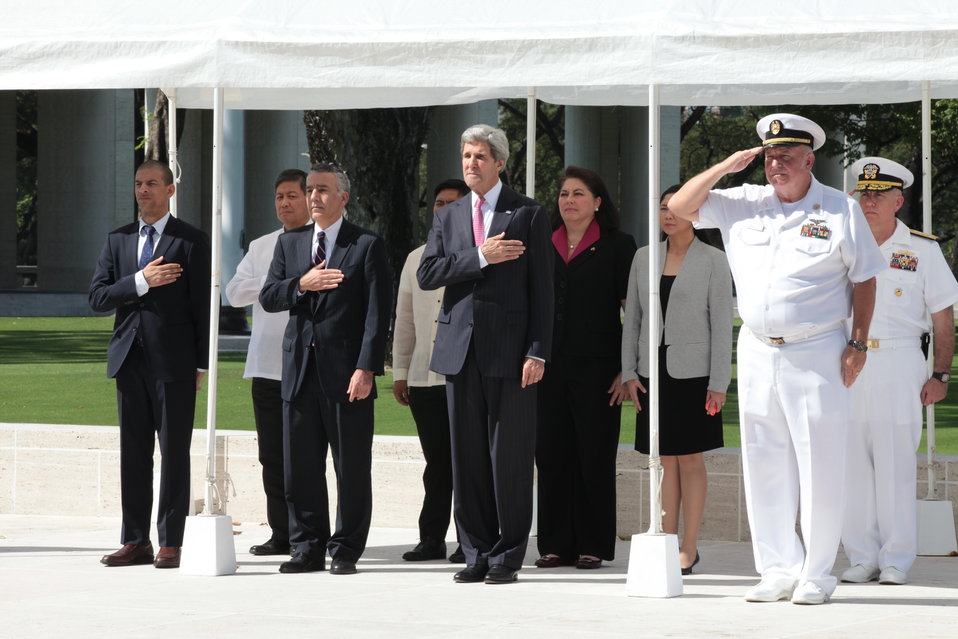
Secretary Kerry Pauses for the National Anthems at the American Cemetery in Manila

U.S. Secretary of State John Kerry, joined Superintendent Larry Adkinson, U.S. Ambassador to the Philippines Philip Goldberg, and other dignitaries, pauses for the U.S. and Filipino National Anthems during a visit to the American Cemetery in Manila on December 17, 2013.